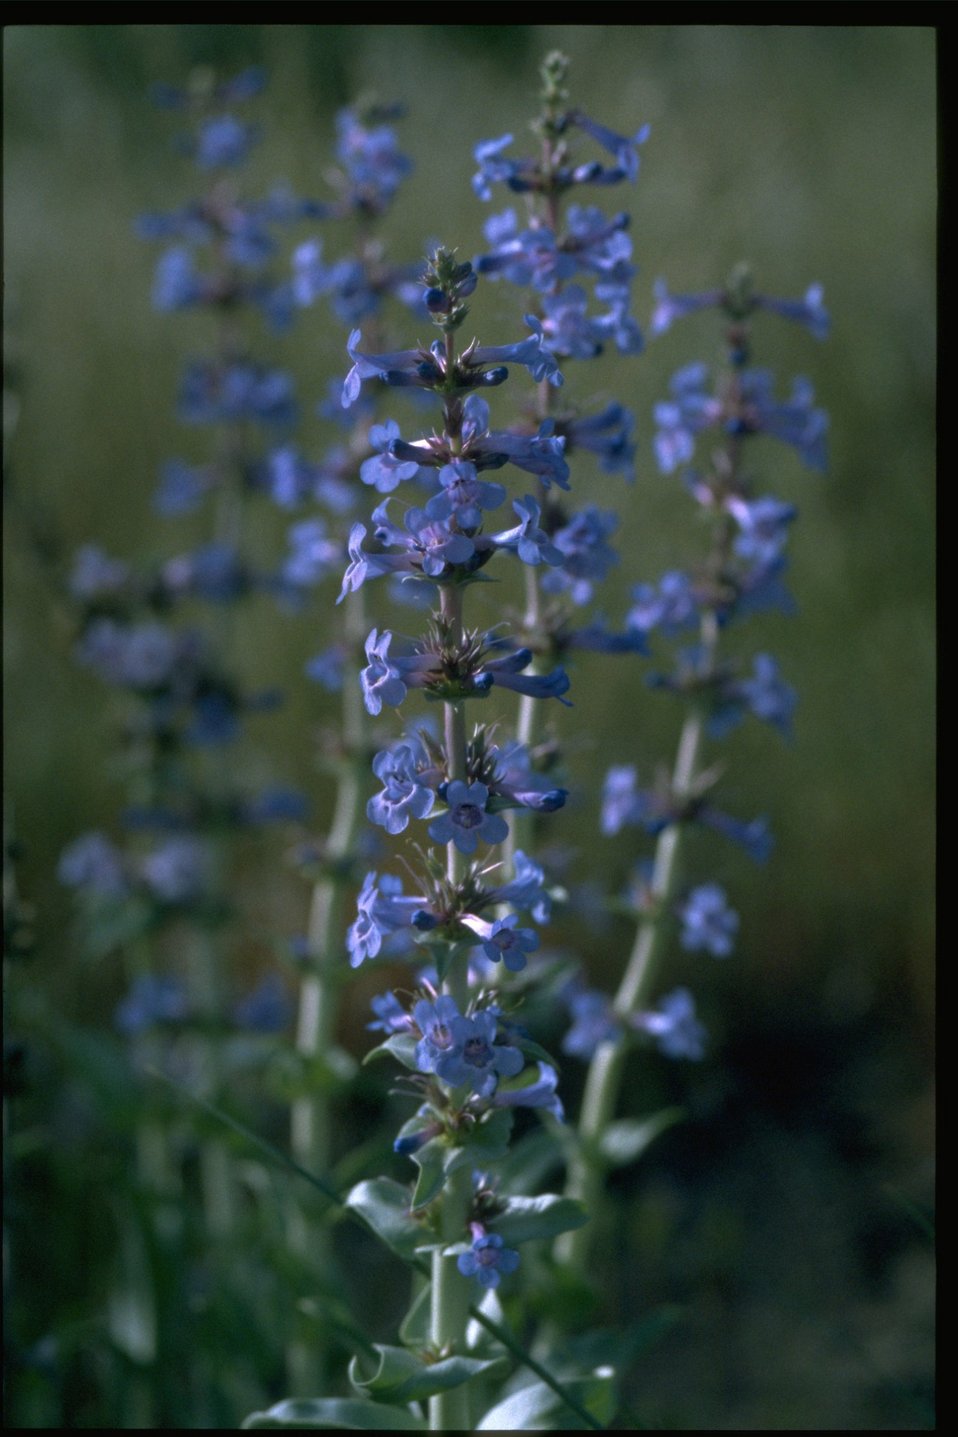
Medium shot of Sand Penstemon (Penstemon acuminatus).